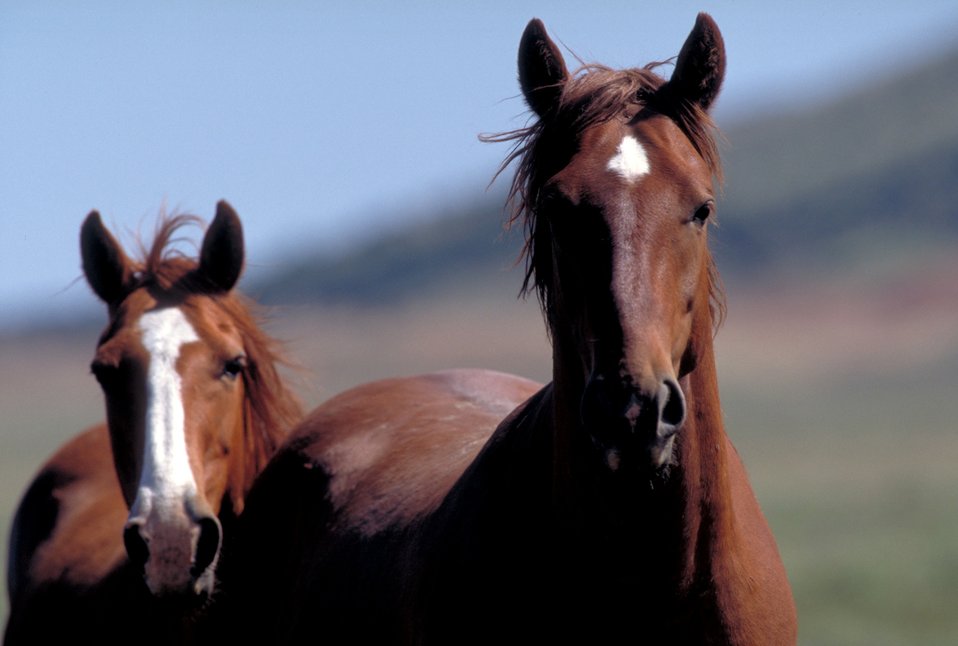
Onaqui Herd near Dugway, Utah.